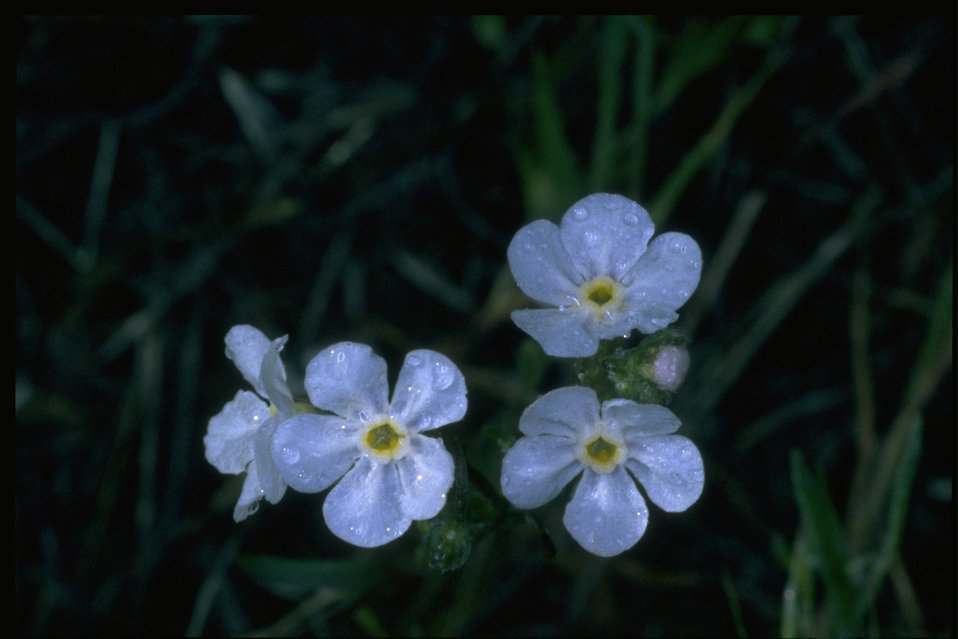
Closeup shot of Phlox wildflowers.